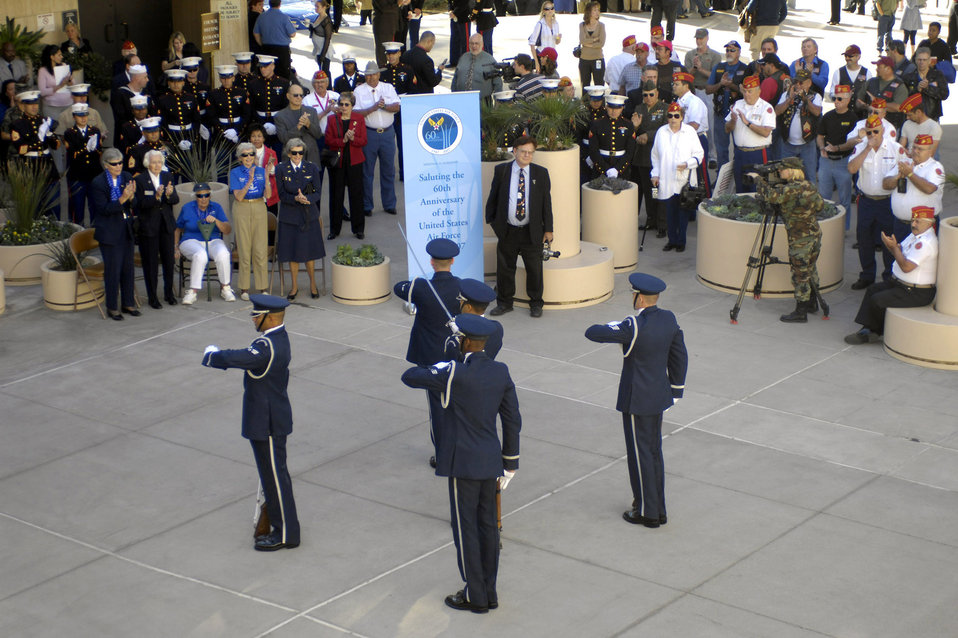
Aviation pioneers attend Heritage to Horizons ceremony

Members of the Air Force Honor Guard provide a rifle drill performance for a crowd outside of the city council chambers Nov. 8 in Las Vegas. Las Vegas Mayor Oscar Goodman held a special council meeting to proclaim Nov. 5 through 11 as Air Force Week in Las Vegas.